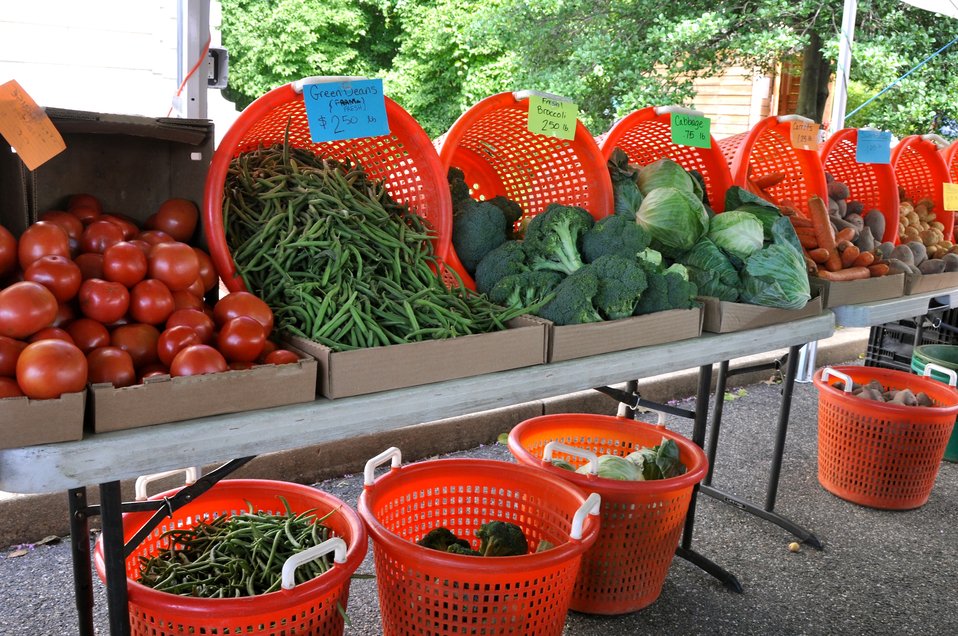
Produce at the USDA Farmers Market

Colorful baskets of produce await customers at the USDA Farmers Market.